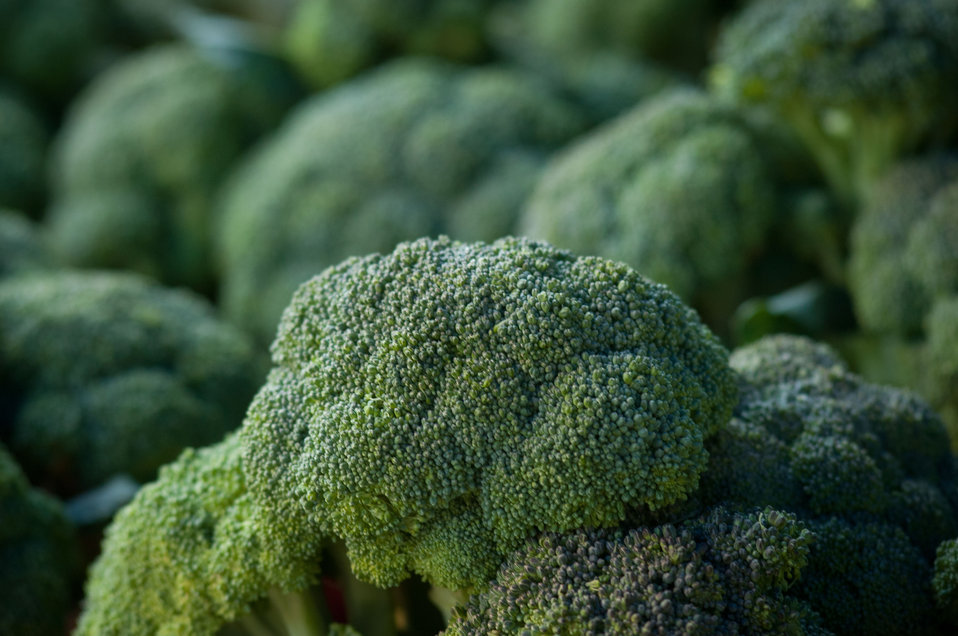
Worden Farm (www.wordenfarm.com) fresh picked organic broccoli are ready for sale at the Saturday Morning Market, in St. Petersburg, FL, on April 14, 2012. Worden Farm is a family farm that provides certified organic produce to Southwest Florida through community supported agriculture (CSA) membership programs and retail sale at several farmer’s (community) markets. Chris Worden, Ph.D. and Eva Worden, Ph.D. founded and operates the farm that employs more than 20 people. Growing certified organic crops in the coastal sandy soil has required them to develop innovative farming techniques which help the farm as well as assist the studies of universities and farm industry. There are several Worden Farm apprenticeships that provide hands-on training in all aspects of the farm, to include direct marketing at the Saturday Morning Market, or other market sites. The farm also holds culinary and gardening workshops, and other interactive educational events. One of their organic certifications is from the U.S. Department of Agriculture (USDA) and they have partnered with the USDA Natural Resources Conservation Service (NRCS) for soil conserving windbreaks and long tunnel structures to nurture seedlings and extend the growing season.